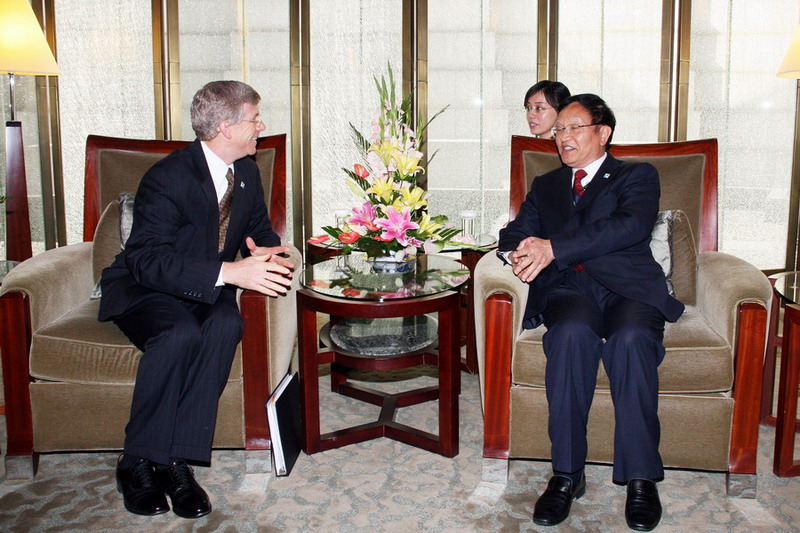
Deputy Secretary Poneman meets with Zhang Guobao, Vice Chairman of China's National Development and Reform Commission and Director of China's National Energy Administration.